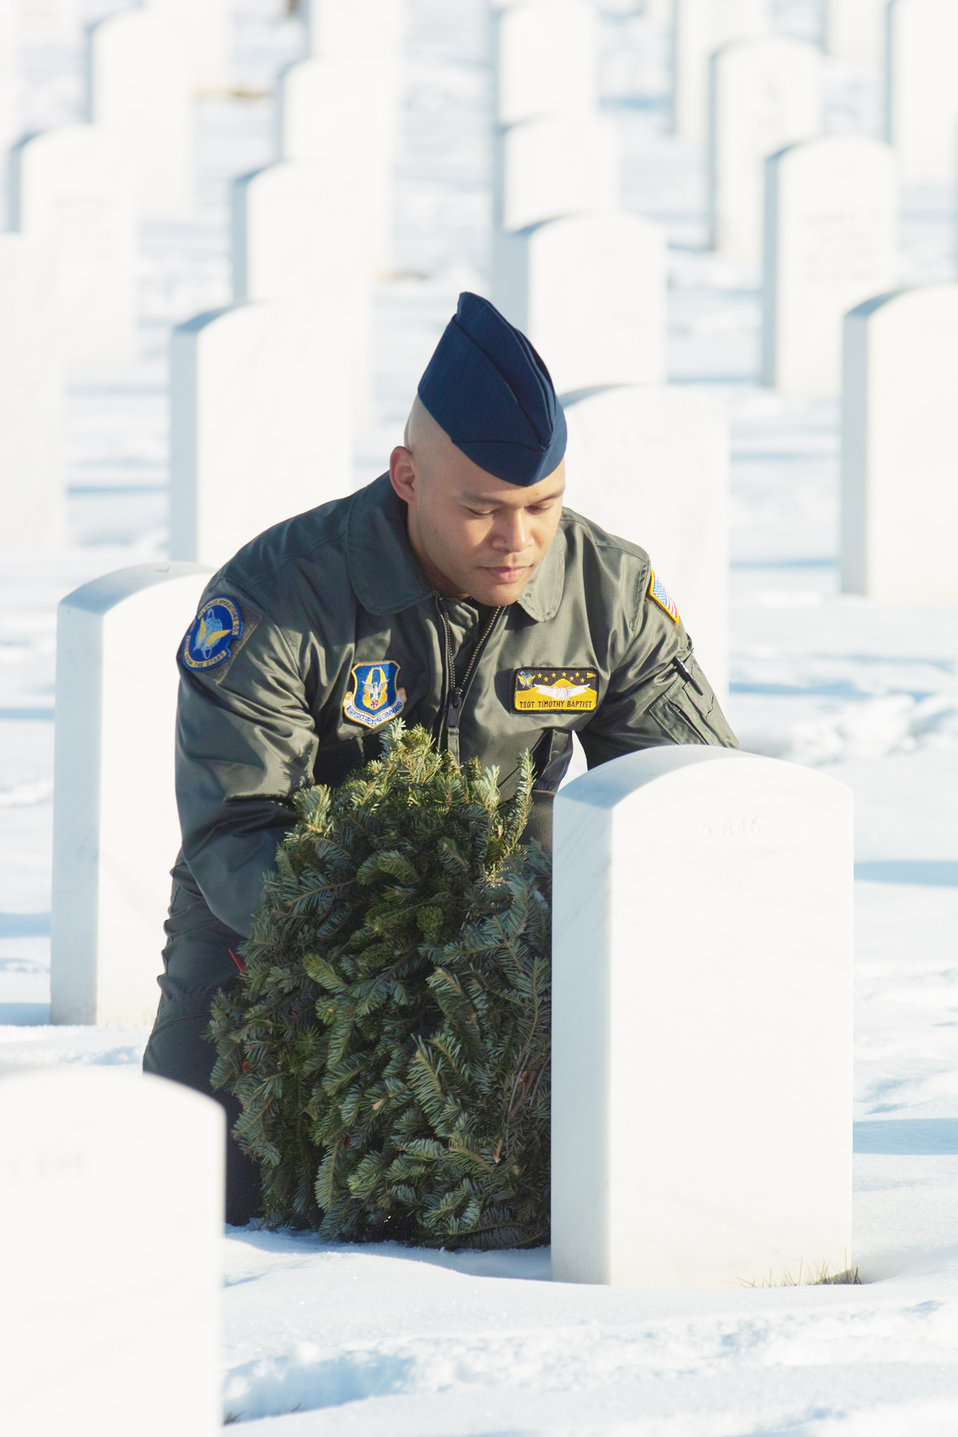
Volunteers honor veterans with wreaths

Tech. Sgt. Timothy Baptist from Schriever Air Force Base, Colo., lays a wreath on a veteran's grave during Wreaths Across America Dec. 14, 2009, at the nearby Fort Logan National Cemetery. Volunteers placed more than 400 wreaths during the event.